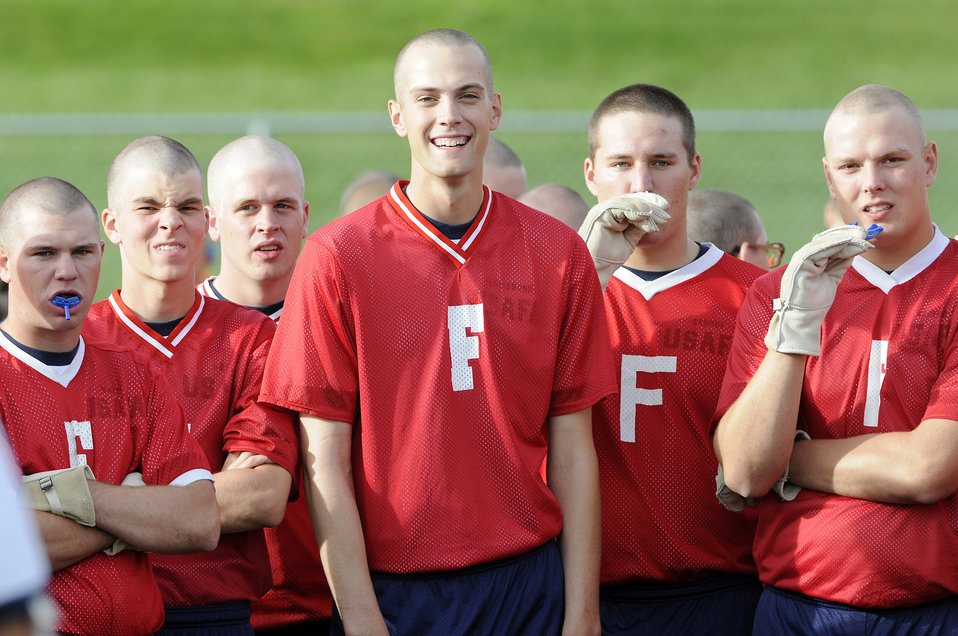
Class of 2013 Field Day

Basic cadet trainees with the U.S. Air Force Academy's Class of 2013 participate during Field Day activities here today. About 1,344 trainees competed in various athletic events during Field Day, including tug of war, log relays, steeple chase and sprint relays. Basic cadet training started June 25 and continues through Aug. 1. The new cadets are in their first month of training and are learning about Air Force heritage, honor, discipline and Air Force core values, in addition to improving physical
fitness. The fall academic semester begins Aug. 6.